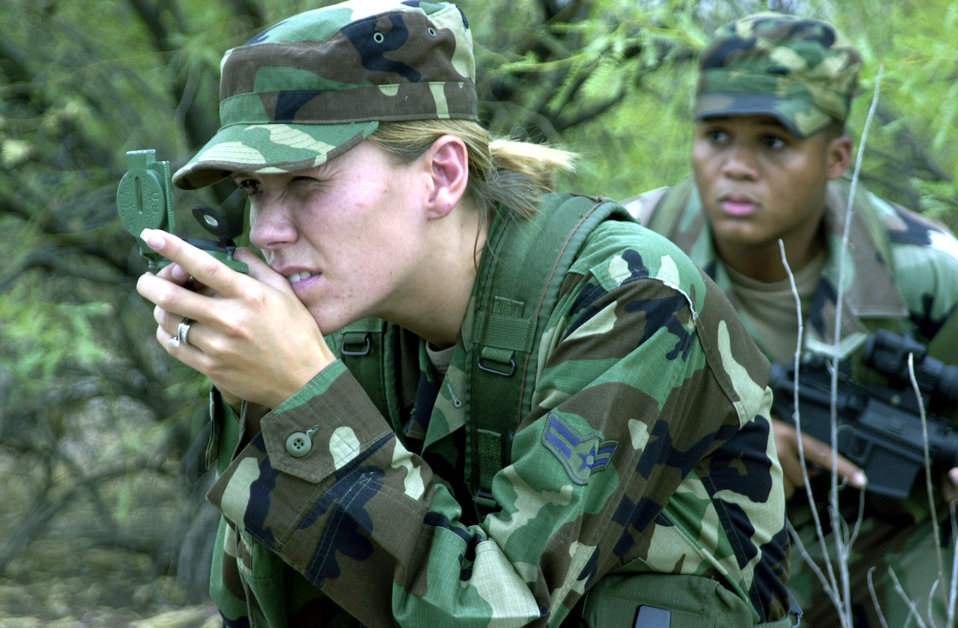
Land navigation

LUKE AIR FORCE BASE, Ariz. (AFPN) -- Airman 1st Class Rebecca James (left) checks the compass heading while Senior Airman Roneal Lang secures the area during land navigation training here Aug. 5. Both Airmen are assigned to the 56th Fighter Wing's security forces squadron. Security forces from the base are training in preparation for an upcoming deployment.